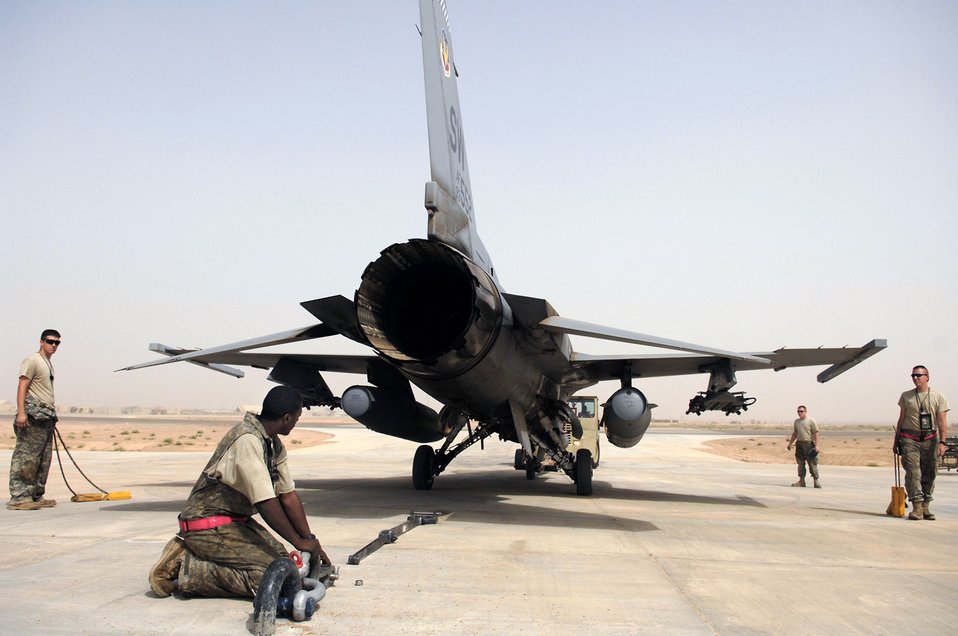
Gentlemen, start your engines!

Members of the 77th Aircraft Maintenance Unit position an F-16 Fighting Falcon for an engine run up July 16 at Joint Base Balad, Iraq. The links and bar attached to the arresting hook secures the aircraft to the ground to prevent any movement and ensure the safety of the Airmen on the ground. The run up of the engine to full afterburner allows the engine mechanics and crew chiefs to ensure all systems are fully functional before putting the fighter back into operational use. The aircraft and members of the 77th AMU are deployed from Shaw Air Force Base, S.C.